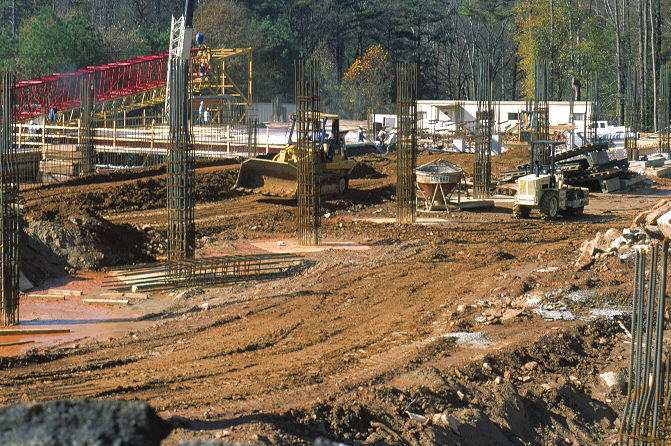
Construction site for south parking deck, CDC Roybal Campus.